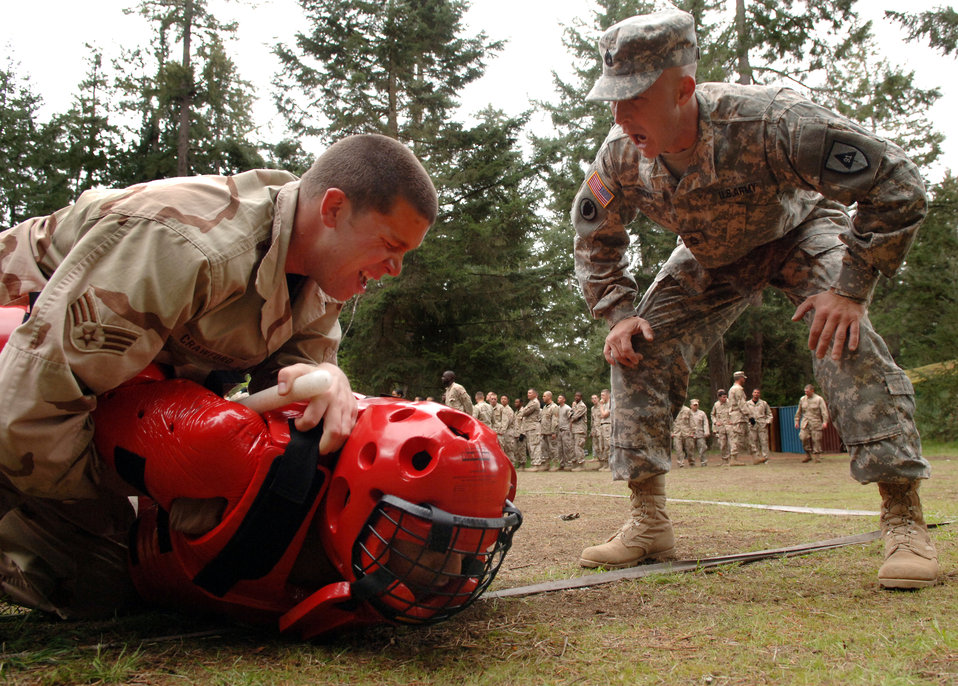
Pepper spray course

Senior Airman Hayden Crawford takes down Army Staff Sgt. Victor Estello, while Sergeant 1st Class Troy Brown shouts instructions during the pepper spray course of detainee training operations, April 25, 2006 at Fort Lewis, Wash.